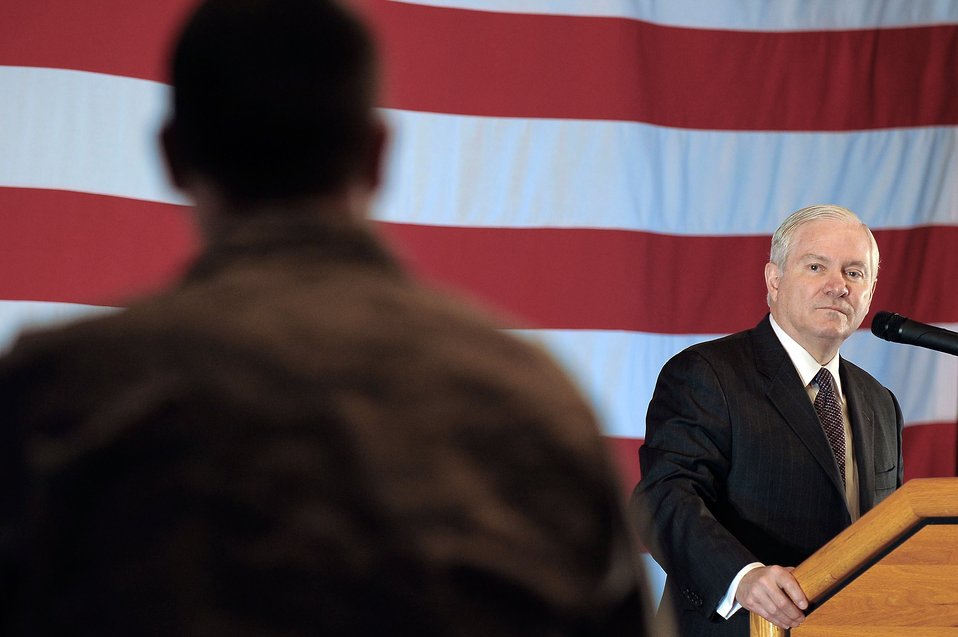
Gates lauds U.S. efforts to boost Saudi military capacity

Defense Secretary Robert M. Gates listens to a question from a military member during his visit to the U.S. Military Training Mission May 6 at Eskan Village in Riyadh, Saudi Arabia.